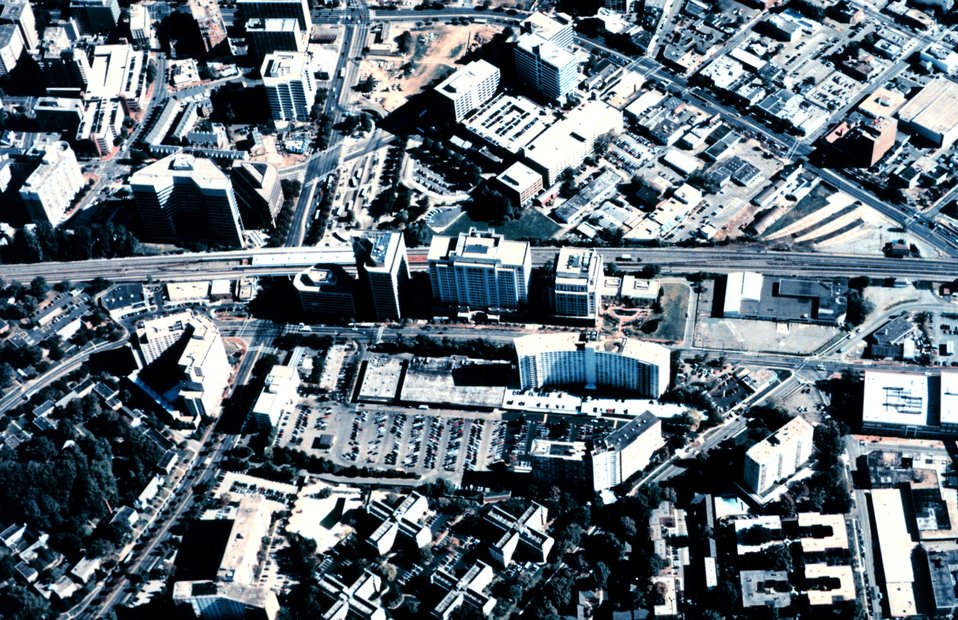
NOAA Headquarters in Silver Spring, Maryland. The NOAA Central Library is in the large rectangular building in the center of the photograph.